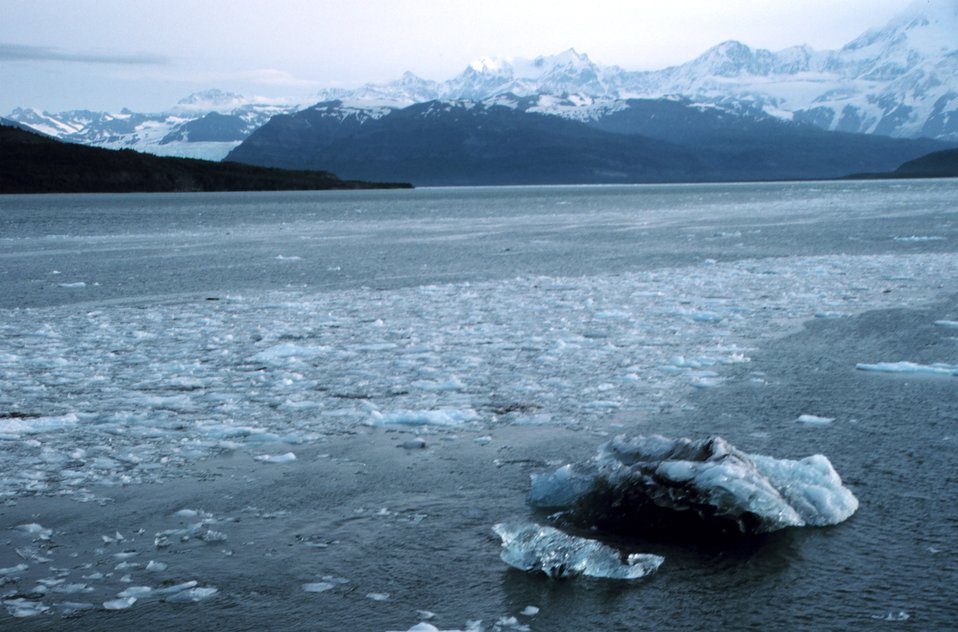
Bergy bits and small glacial ice chunks along tide rip line in Icy Bay.